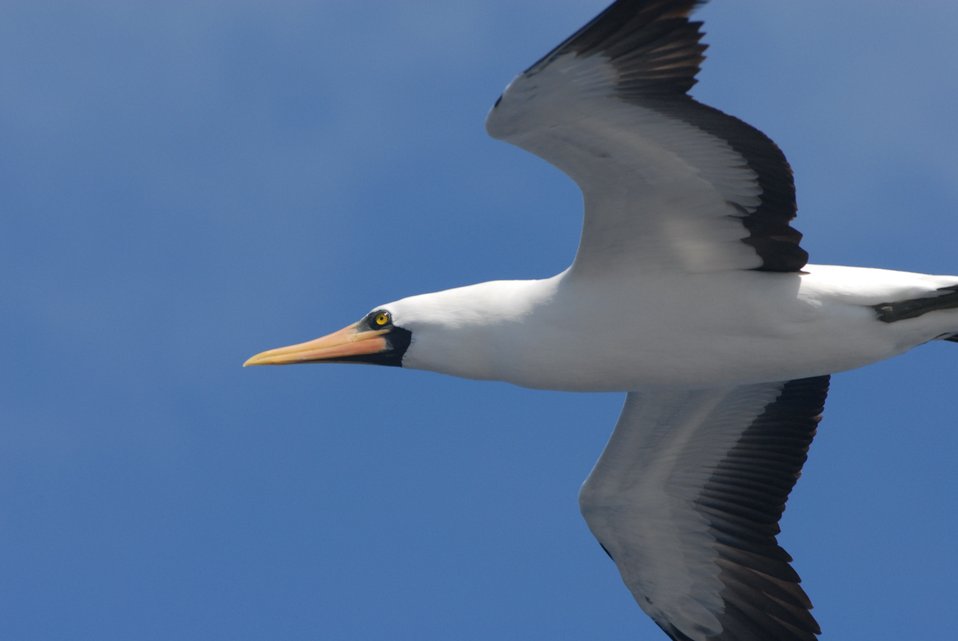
Booby in flight up close.